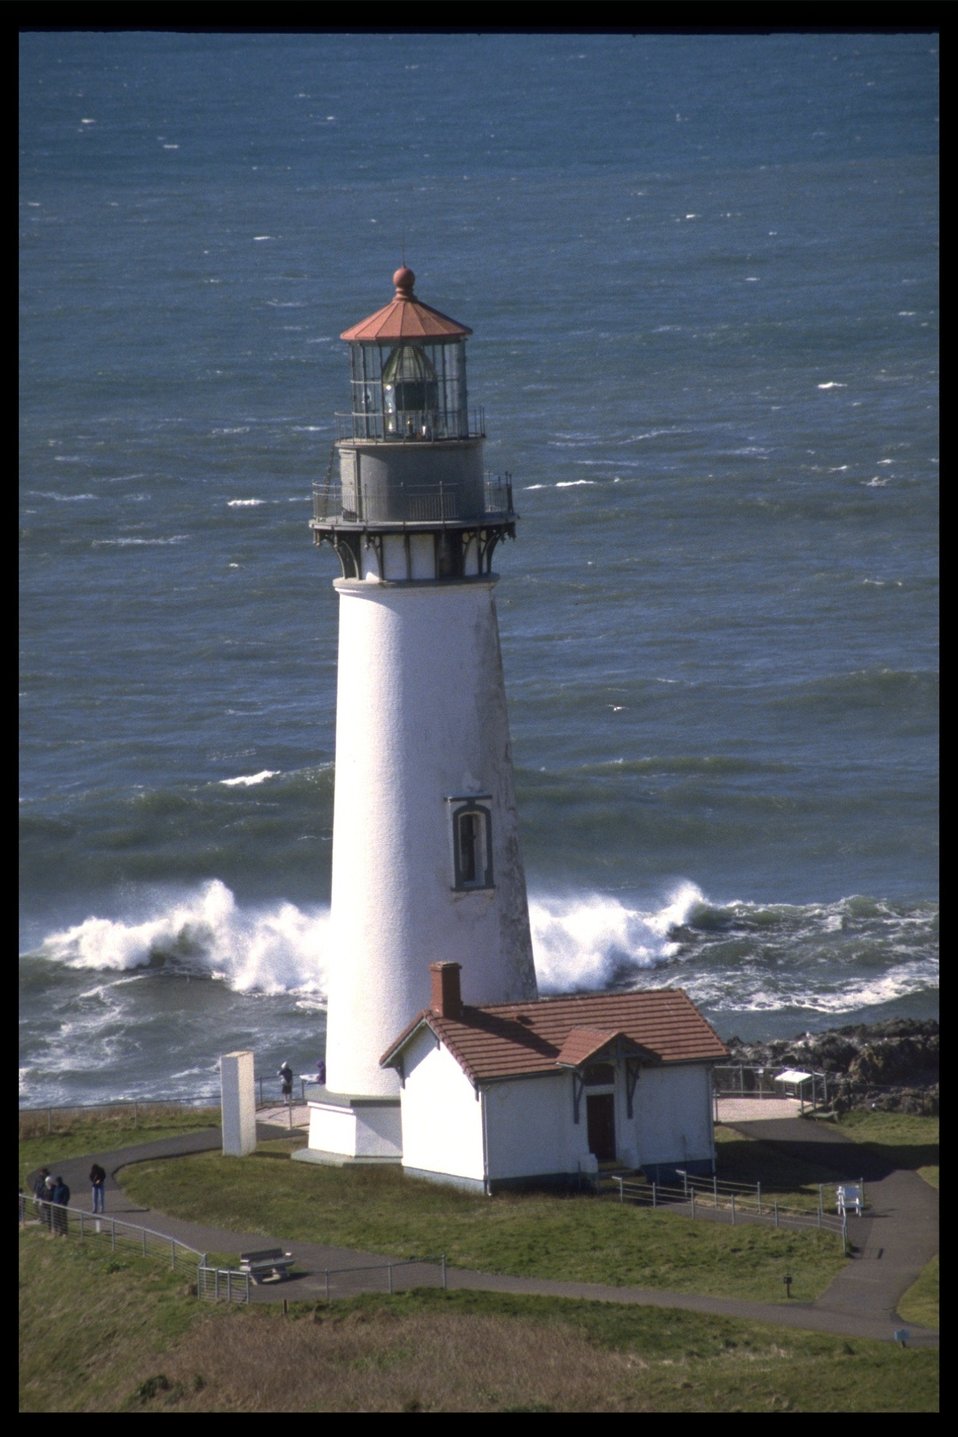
Yaquina Head Lighthouse.